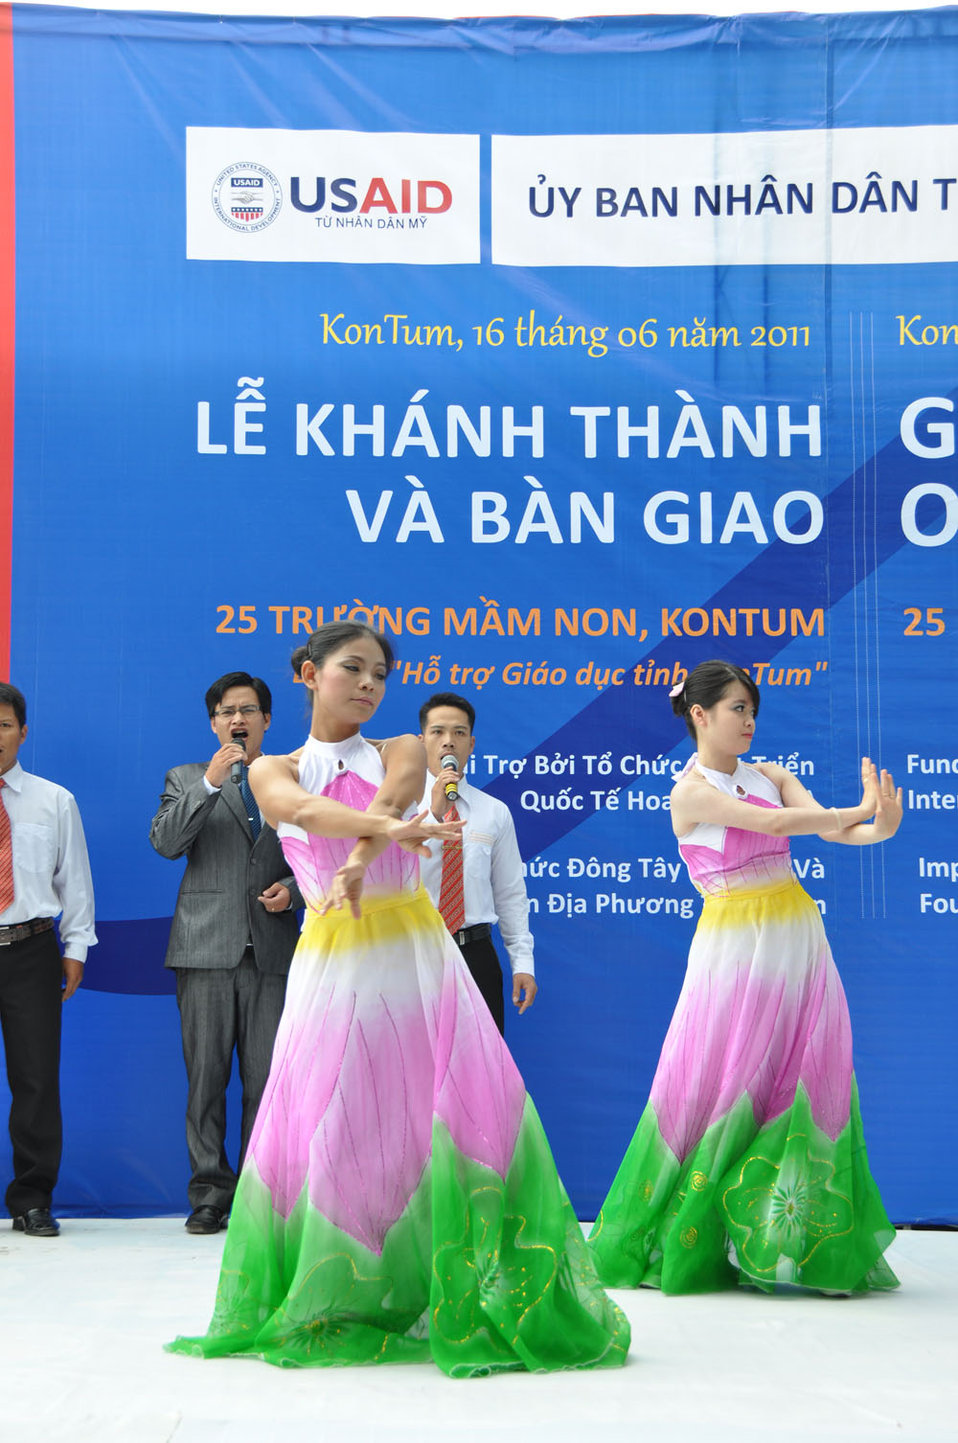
Singers and dancers perform at a kindergarten hand-over ceremony in Kon Tum.